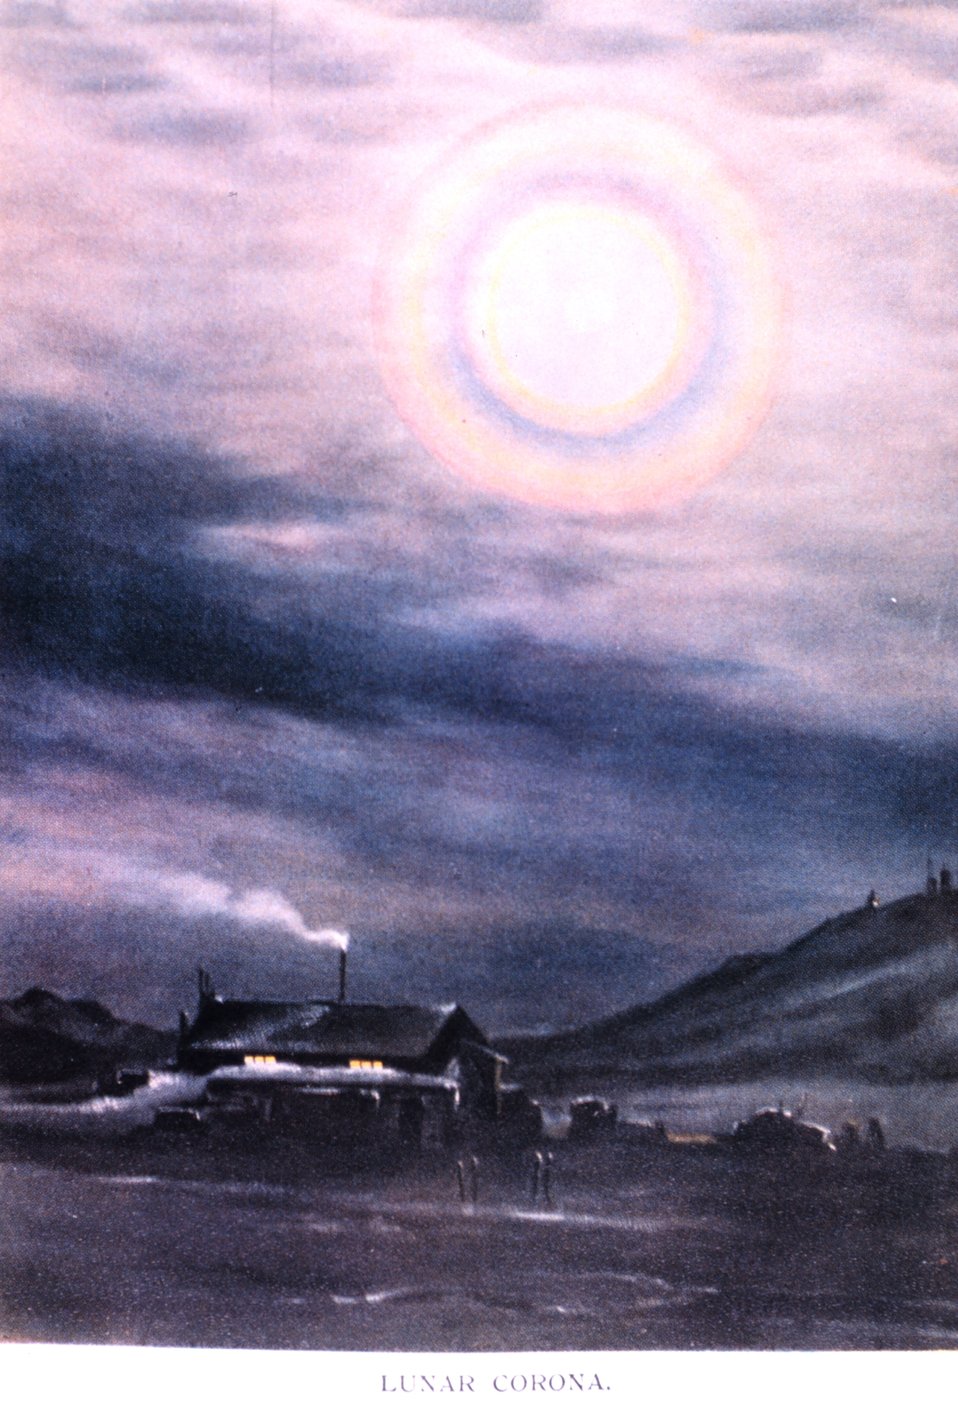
Lunar corona. In: 'Scott's Last Expedition', 1913. Dodd, Mead, and Company, New York. P. 176. Vol. I. Library Call Number G850 1910 .S35 1913.